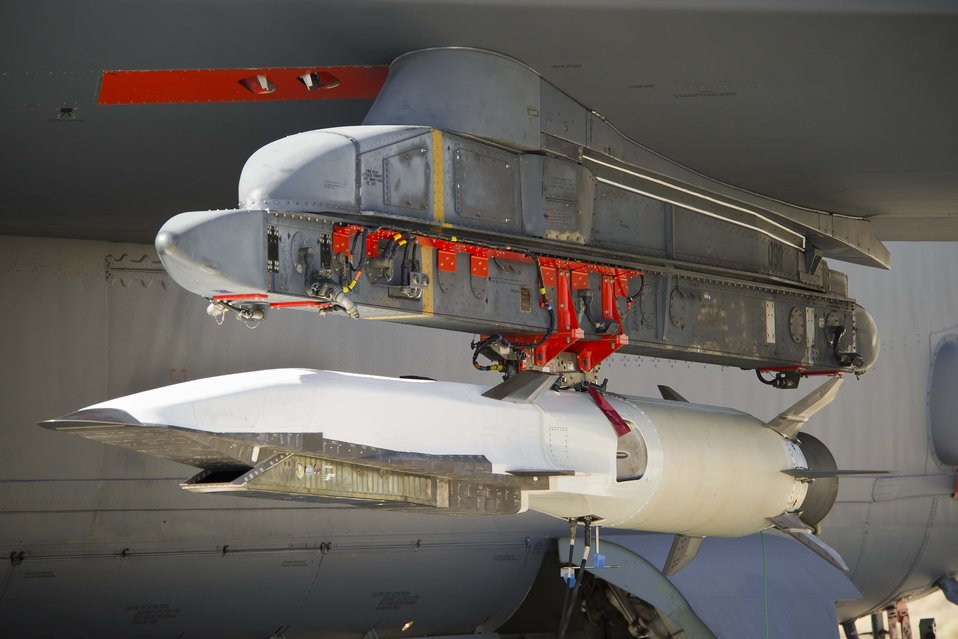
X-51A flight ends prematurely

The X-51A Waverider is mounted under the wing of a B-52 Stratofortress at Edwards Air Force Base, Calif., in preparation of its Aug. 14, 2012, test flight. On a previous flight, the X-51A flew for more than three minutes at Mach 4.88 under scramjet power.